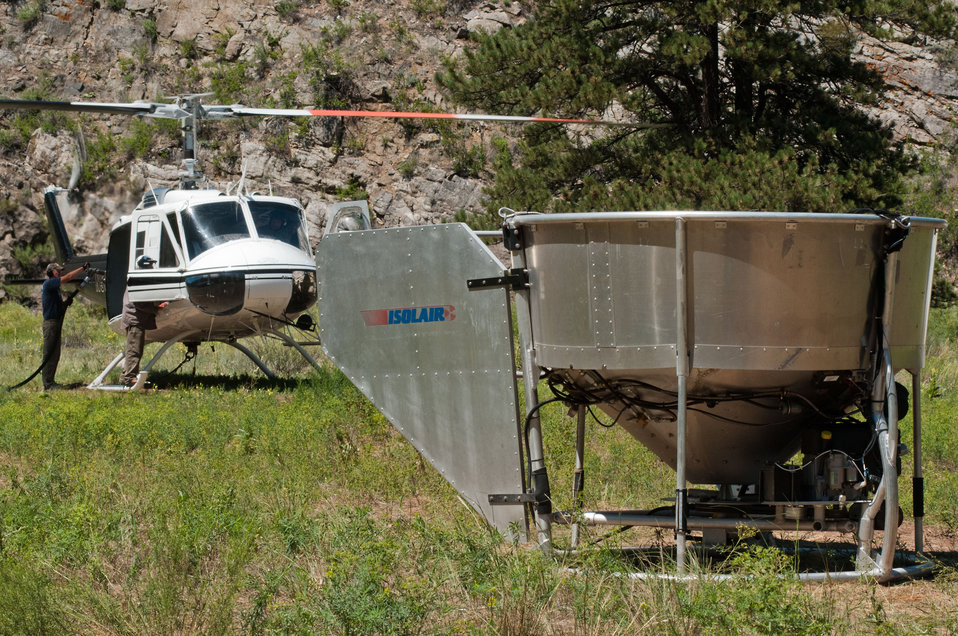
Mountain West Helicopter aircraft mechanic Garry Saunders refuels a Bell UH-1H (2-blade rotor), at the Seaman Reservoir spillway, near Fort Collins, Colo., on Friday, July 20, 2012. In the foreground is an aerial seed spreader, used in the continuing aerial application of straw and seed mix to mitigate soil and ash runoff from the mountainous terrain leading to Seaman Reservoir, drinking water resource for the City of Greeley. The 100-150-foot cable below it holds and releases loads of certified straw weighing 1,400 – 2,000 pounds. Forest service lands received straw, while private and other lands receive a seed mix and straw to promote ground cover plant growth on ash-covered lands. In total, 1,800 tons of straw will be applied during the 14-day operation. One quarter of the cost was paid by the City of Greeley and the U.S. Department of Agriculture funded the remainder. The Hewlett Gulch Fire was started by a camper’s alcohol stove, on May 14, at the saddle of a picturesque mountain ridge along the Hewlett Gulch Trail of Poudre Canyon, in the Roosevelt National Forest, 60 miles north of Denver. At it’s peak more than 400 firefighters were battling fires being pushed by 50 mph winds that helped blacken over 12-square-miles of dry ground cover, brush and trees. Many of the trees were already dead and tinder dry from beetle-kill. Their efforts have successfully kept water in the reservoir clean and clear, while downstream water flow has gone from famous Colorado clear water to nearly black flows of water heavily laden with ash, silt, and burnt debris that recent thunderstorms have already washed down from the mountainsides.